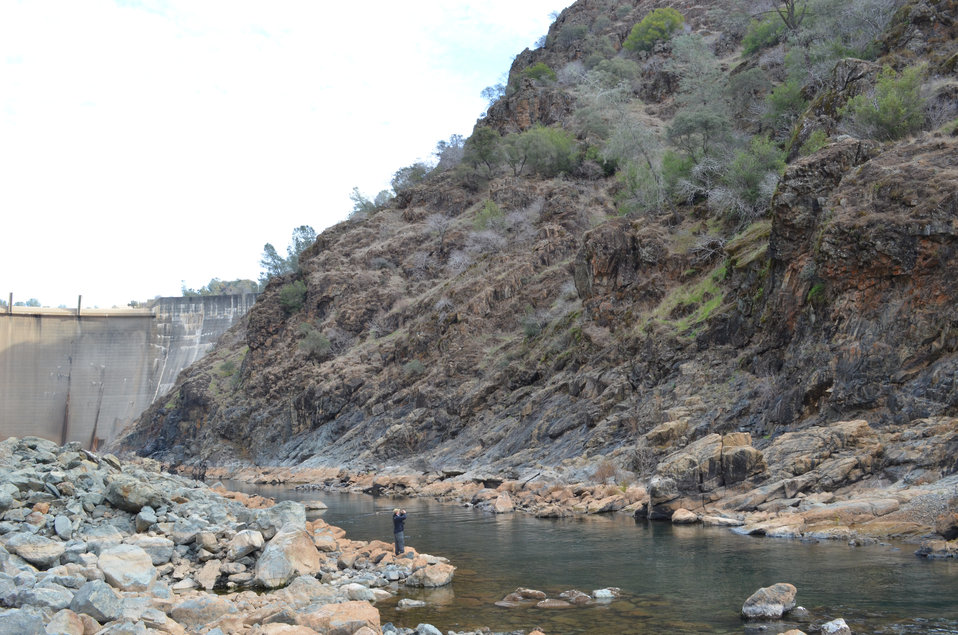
Building a 3-D model of Yuba River canyon

Rocko Brown, a doctoral candidate in geomorphology at the University of California-Davis, photographs the Yuba River canyon below Englebright Dam near Smartsville, Calif., Jan. 6, 2012. Researchers at the University of California-Davis will use the images to create a virtual 3-D model of the river canyon to aid future research. Under the direction of the National Marine Fisheries Service, the U.S. Army Corps of Engineers Sacramento District, which owns and manages the dam, has placed more than 5,000 tons of gravel in the river to improve spawning habitat for the threatened Chinook salmon and steelhead trout species. Dr. Greg Pasternack, hydrology professor at UC-Davis, designed the gravel injection project and is evaluating the gravel’s movement through the river course.